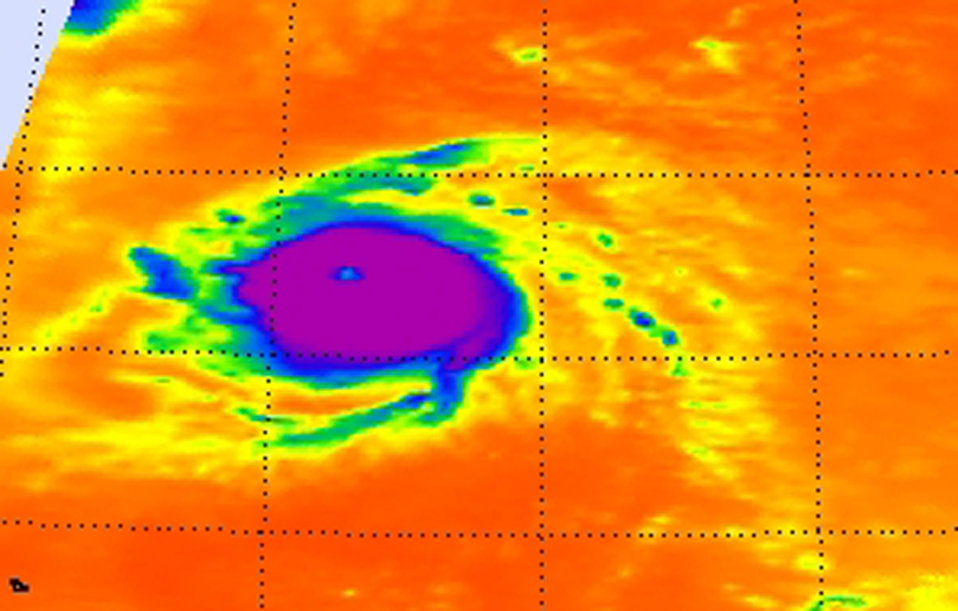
NASA's Aqua Satellite Checks Ike's Temperature